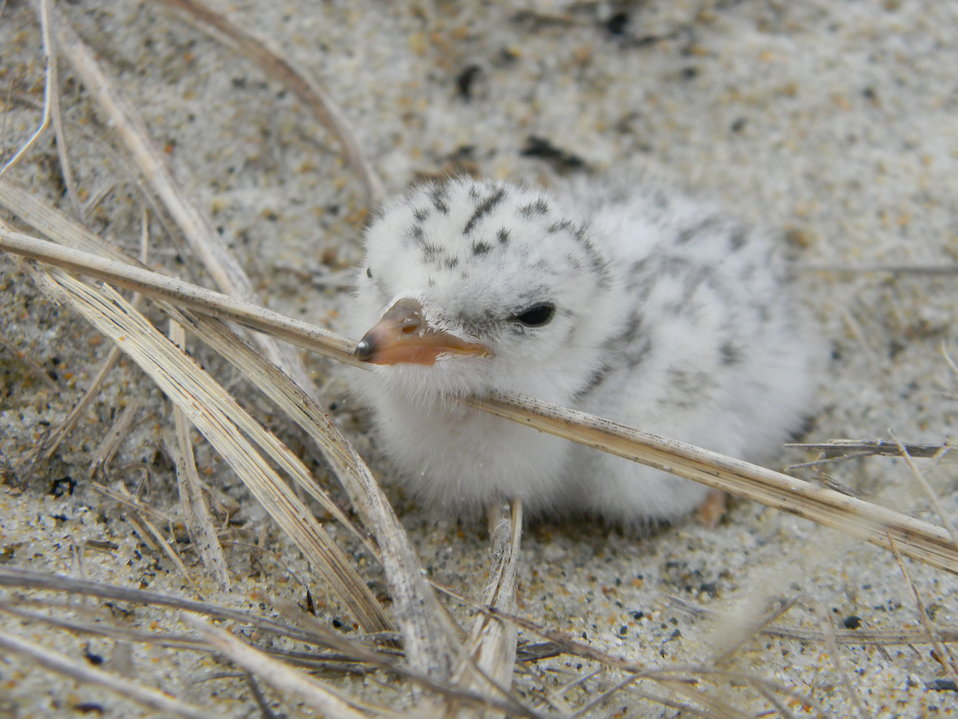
Least tern chick at Rachel Carson National Wildlife Refuge.

Credit: Brian Rudinsky/USFWS

www.fws.gov/refuge/rachel carson/